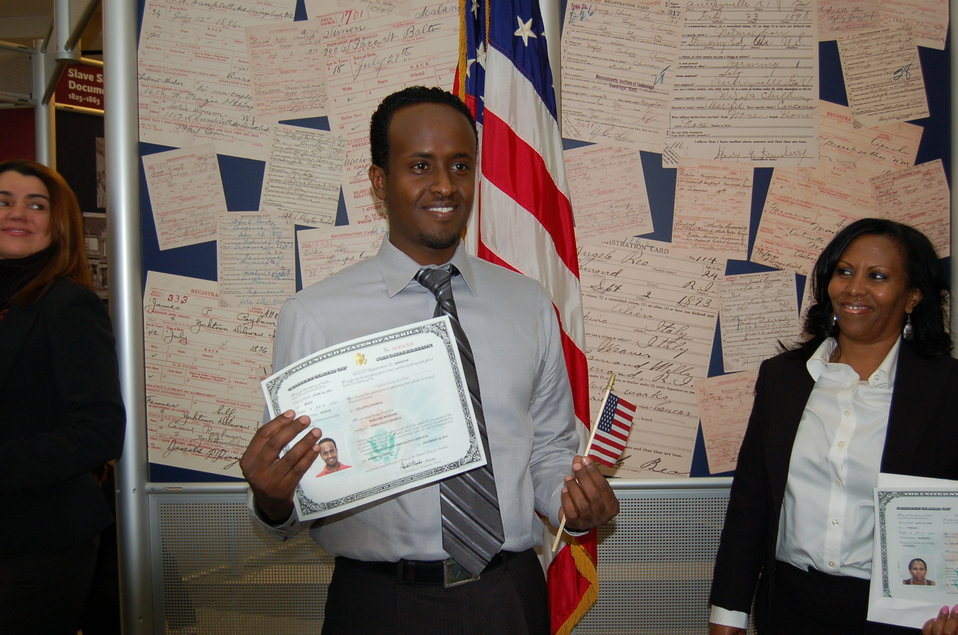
New Citizens